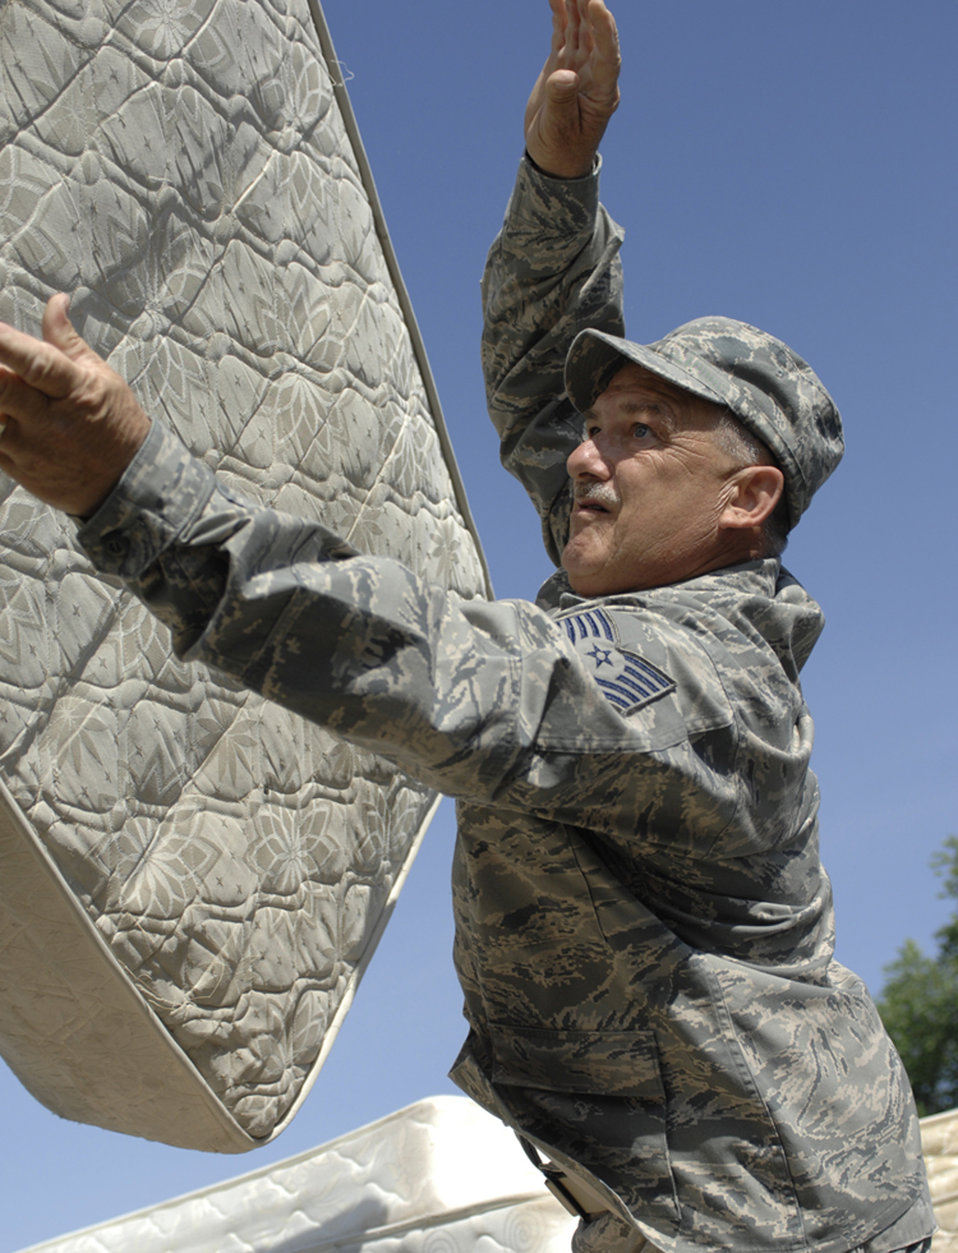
Airmen donate mattresses to help community

Tech. Sgt. Kenneth Puchtler helps transfer mattresses to Counterpart International Incorporated, a community and humanitarian assistance program, at Manas Air Base, Kyrgyzstan, June 10. More than 300 mattresses were donated and will help six hospitals in nearby capitol of Bishkek. Sergeant Puchtler is an assistant utility team crew chief with the 376th Expeditionary Force Support Squadron.